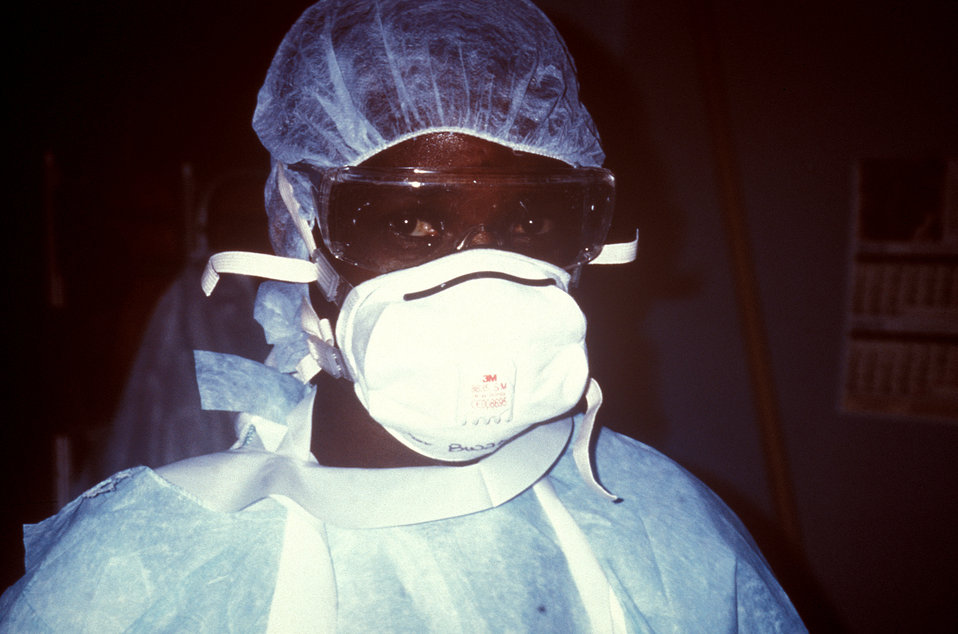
This Zairian nurse was prepared to enter the Ebola VHF isolation ward during the a 1995 outbreak in Kikwit, Zaire.